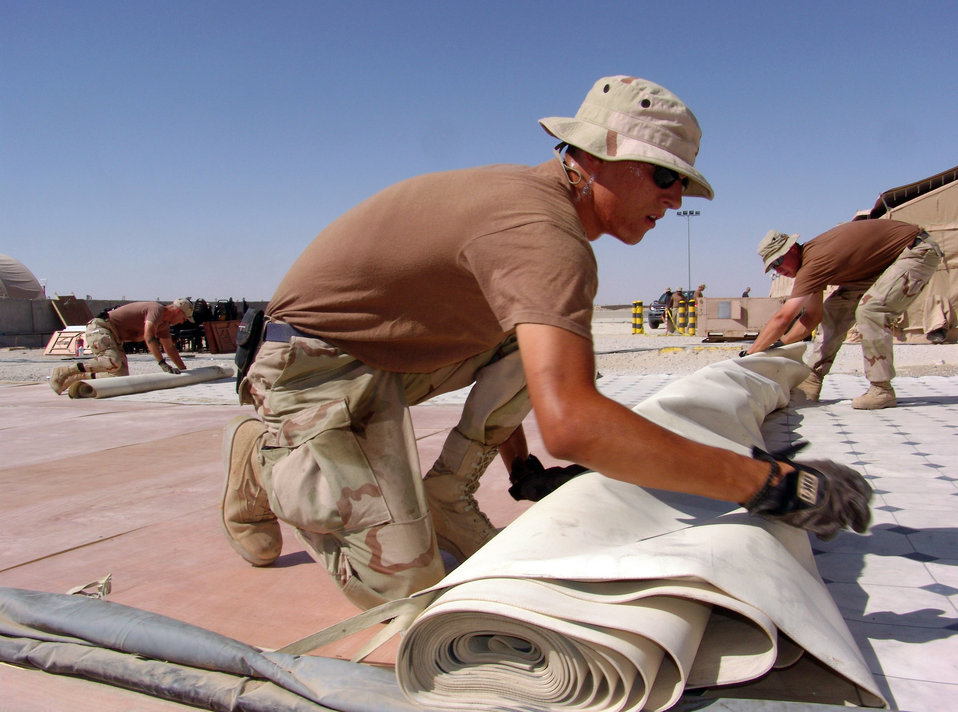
Operation IRAQI FREEDOM

SOUTHWEST ASIA -- Airman 1st Class Steven Owen (left) and Staff Sgt. Troy Strauser roll up linoleum flooring where mess tents once stood to make way for an expanded permanent dining facility at a forward-deployed location. The Airmen are assigned to the 386th Expeditionary Civil Engineer Squadron and are deployed from Misawa Air Base, Japan.